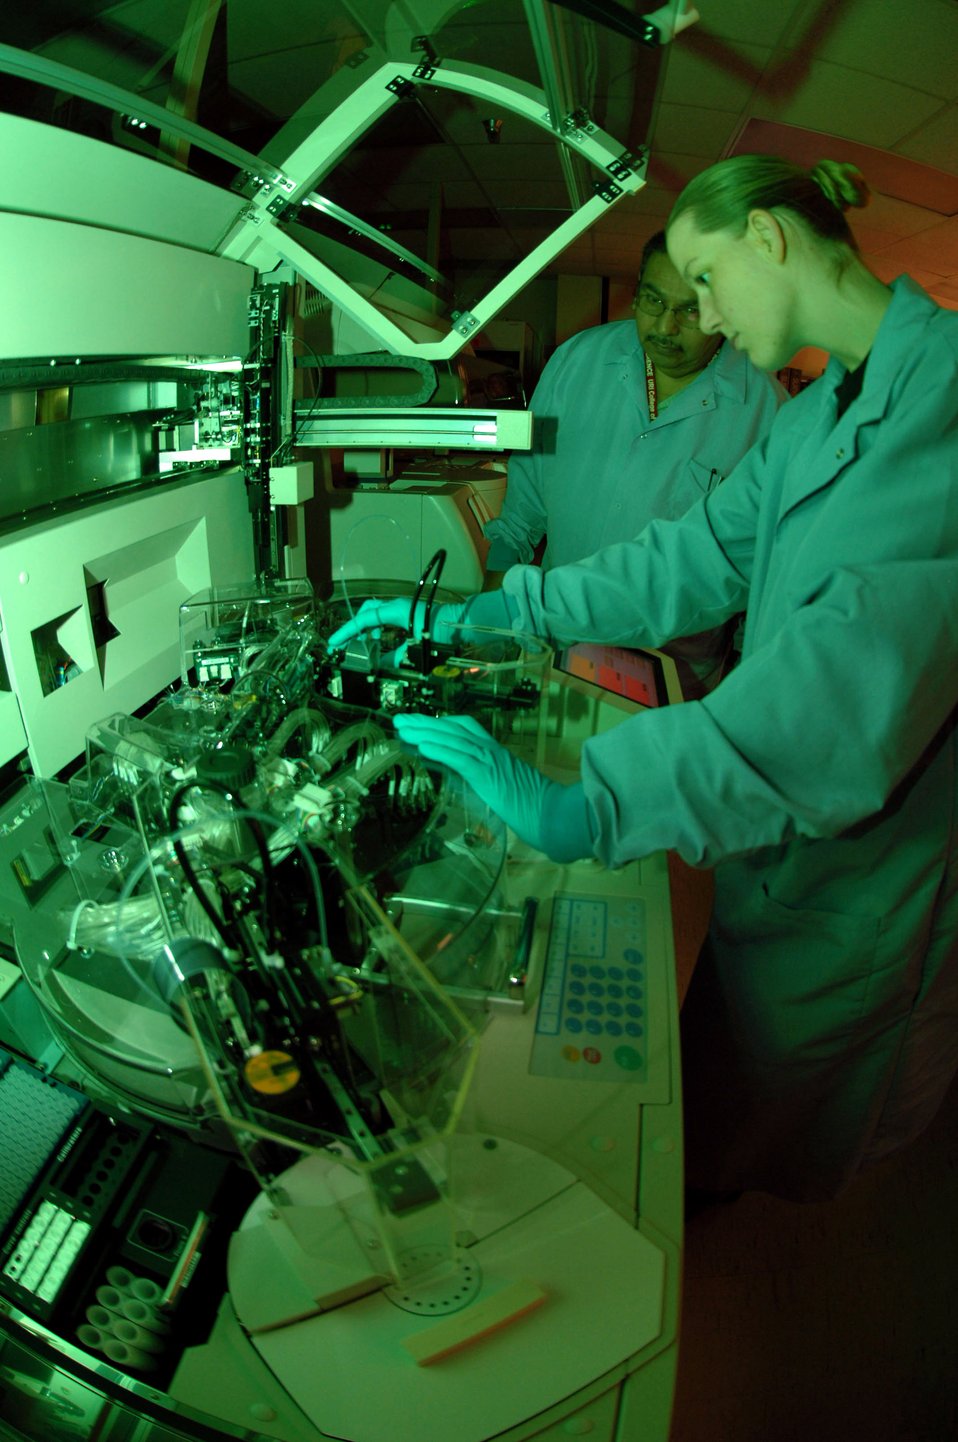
Wilford Hall adds new allergen testing equipment

Staff Sgt. Kristin Parsons loads reagents into the ImmunoCap 1,000, a newly acquired allergy testing machine in the diagnostic immunology laboratory Dec. 13 at Wilford Hall Medical Center at Lackland Air Force Base, Texas. The laboratory recently was named as the Air Force's Center of Excellence for allergen testing. Sergeant Parsons is an immunology technician in the 59th Laboratory Squadron.